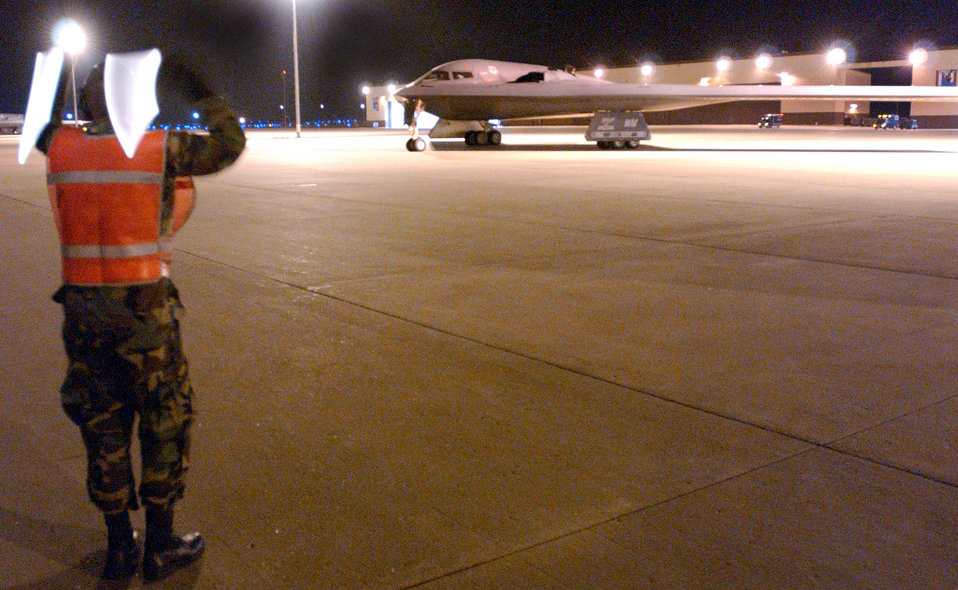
Stealth bomber taxi

WHITEMAN AIR FORCE BASE, Mo. -- Senior Airman Jeremy Pratt, a B-2 Spirit crew chief, marshals a stealth bomber here headed for a combat mission over Iraq.